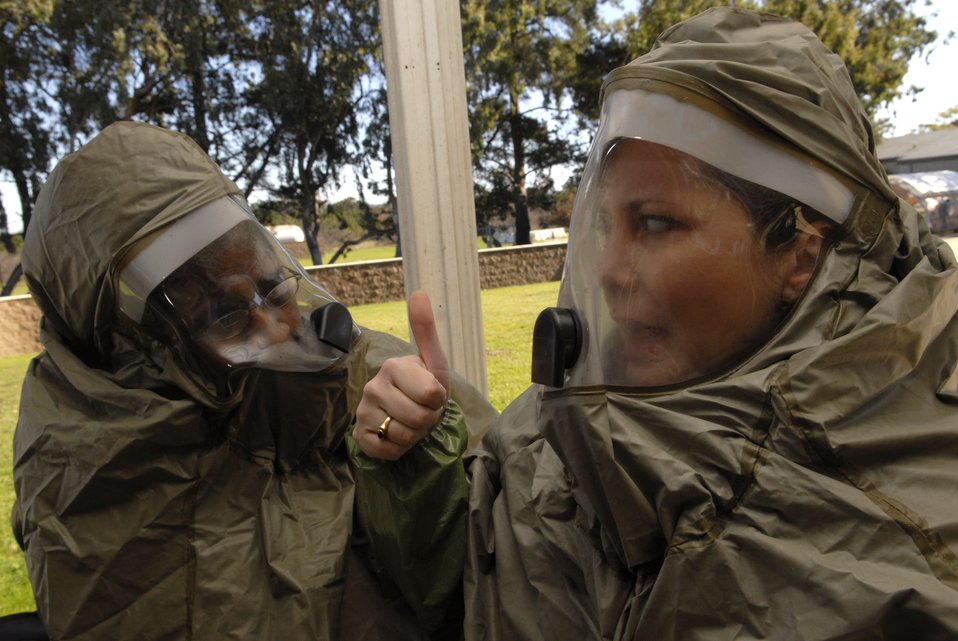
Zip it up here...

Tech. Sgt. Cassandra Greene helps Tech. Sgt. Danielle Smalley put on her chemical gear during a medical emergency response capabilities assessment Jan. 26 at Vandenberg Air Force Base, Calif. Both Airmen are assigned to the 30th Medical Group.